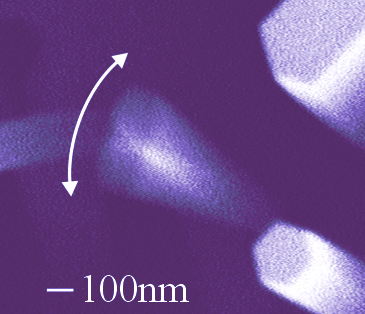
Nanowire; Practical Oscillators

Electron micrograph of a NIST-grown nanowire with a high 'quality factor' vibrating more than 1 million times per second. At lower right, a stationary nanowire shows the typical hexagonal shape of the gallium nitride crystals.